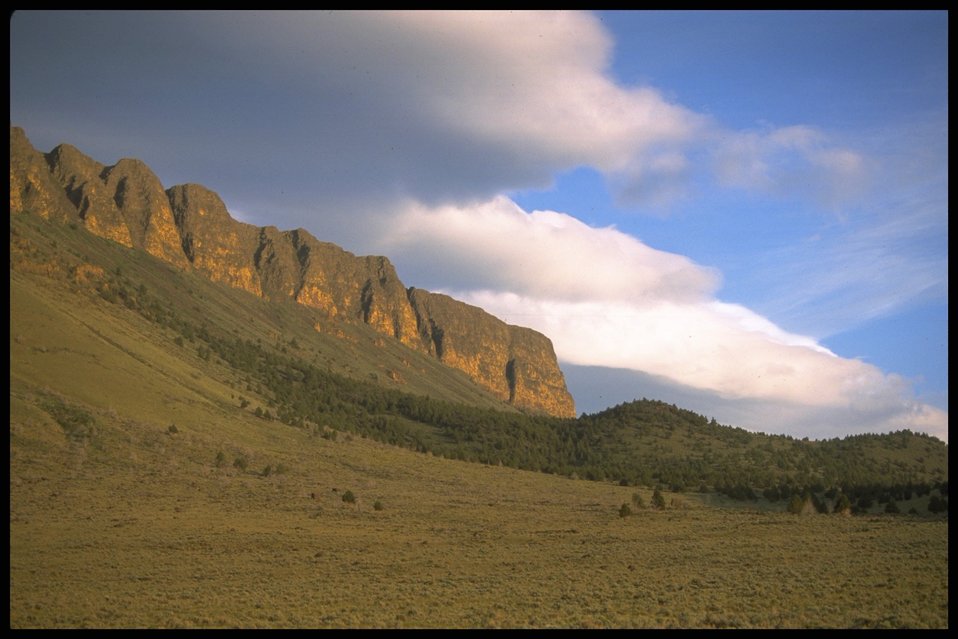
Scenic view of Abert Rim, Lakeview District.